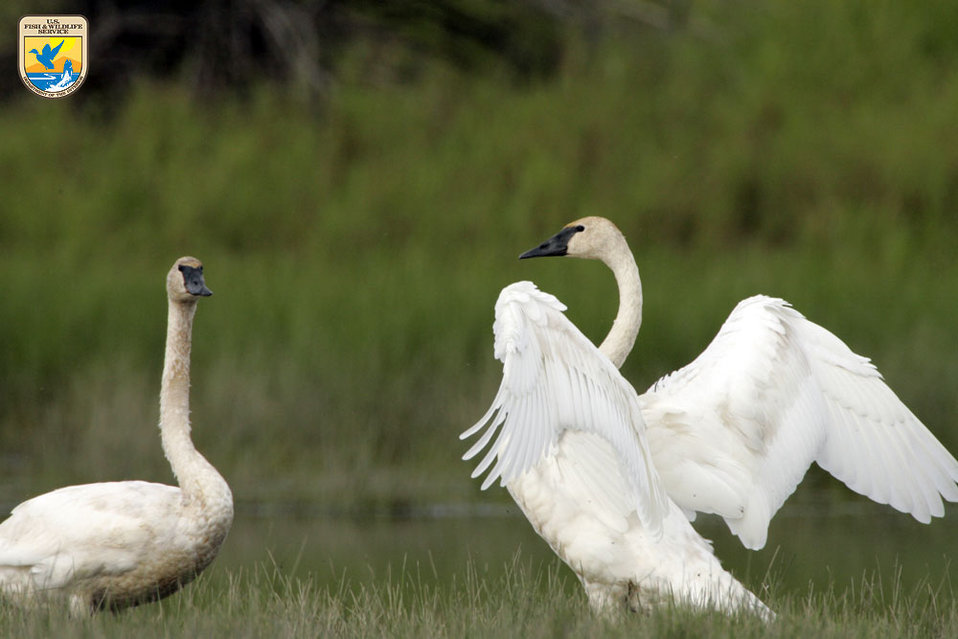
Swans - Region 7

Swans